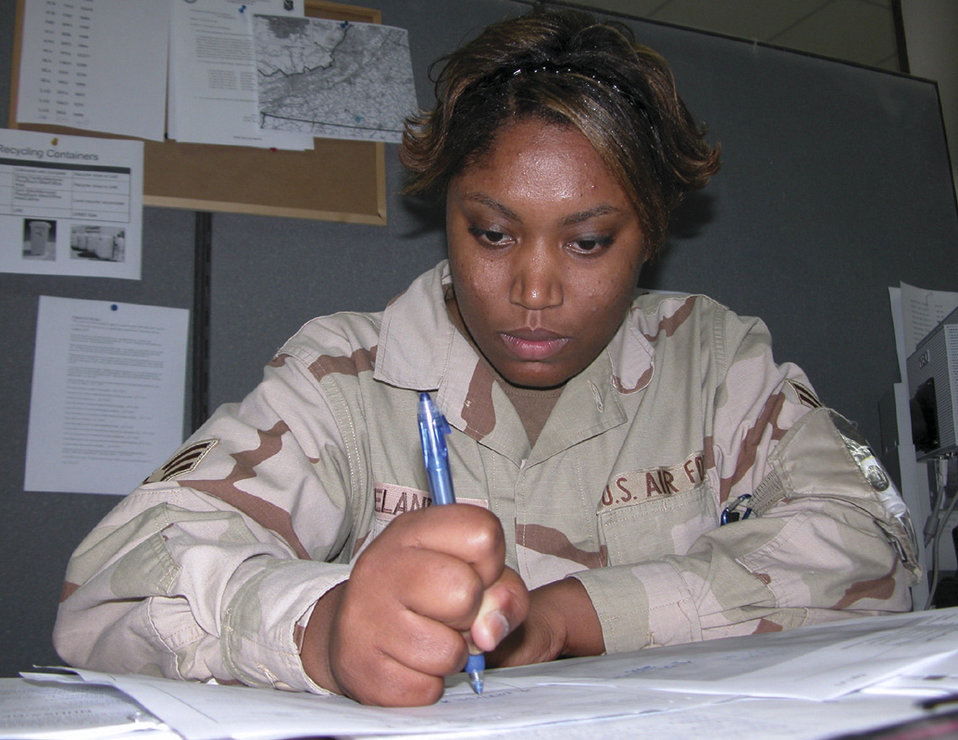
Logistics Airman excels in passenger travel

SOUTHWEST ASIA -- Senior Airman Latasha Ireland completes paperwork at a forward-deployed location. She is a 379th Expeditionary Logistics Readiness Squadron traffic management specialist deployed from Ellsworth Air Force Base, S.D.